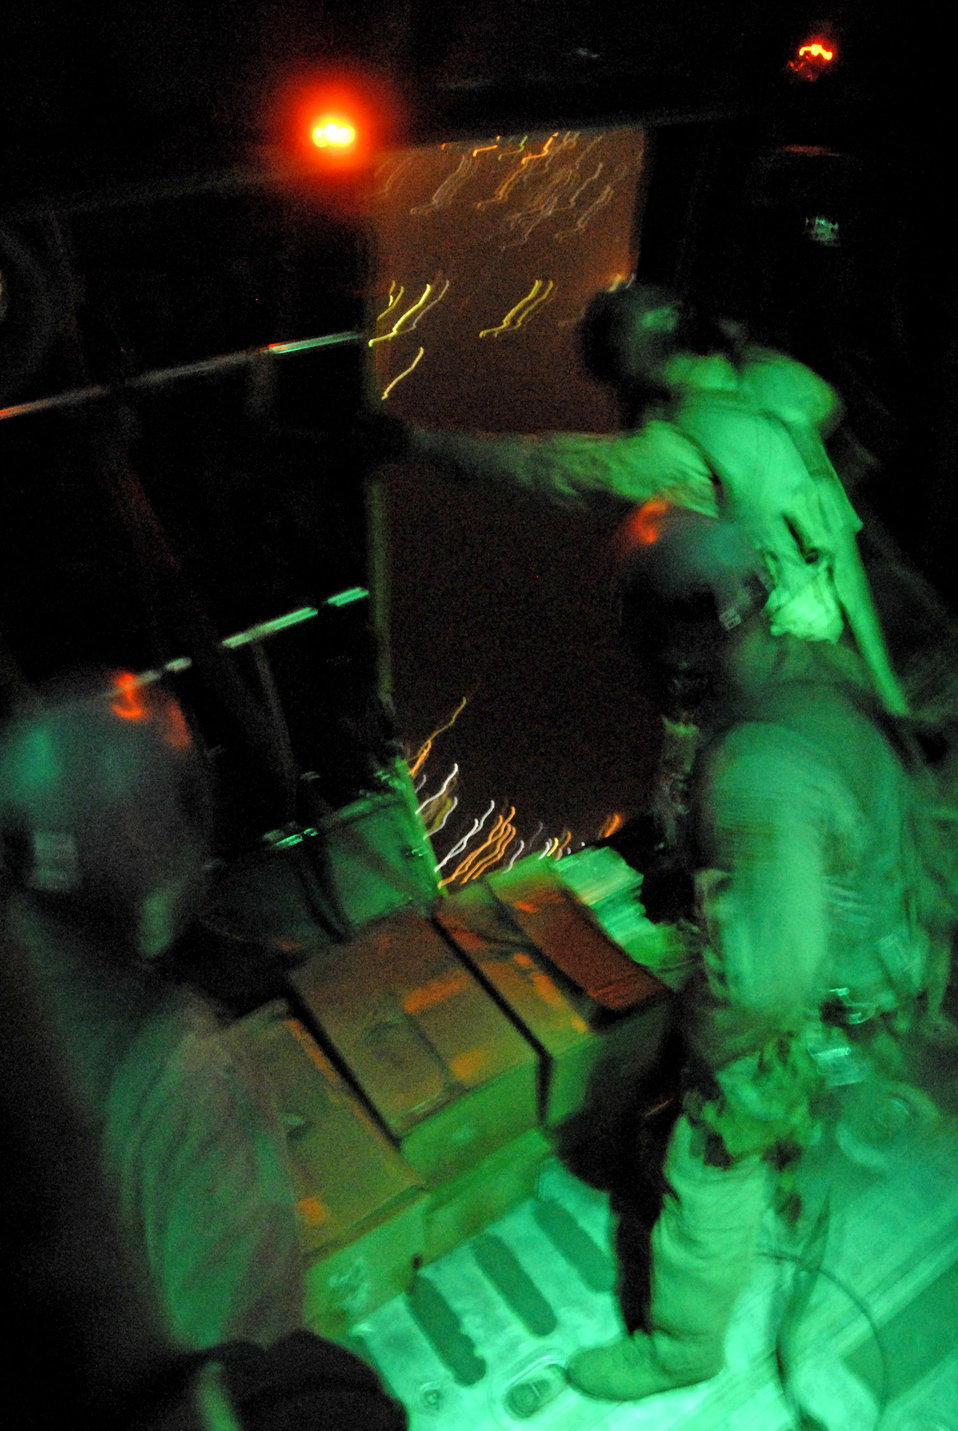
Airmen airdrop messages to Iraqi citizens

Aircrew members from the 737th Expeditionary Airlift Squadron wait for the light above the right rear troop door to turn green before they push out several hundred thousand leaflets over an Iraqi city recently. The three-person team includes 1st Lt. Justin Fitzpatrick (left) and Senior Airman Joel Pfaff (center), who fill the roles as feeders to Staff Sgt. Gabriel Molanders (right), the kicker on the team who ensures the leaflets get out the door and over the target area. All three aircrew members are deployed from Dyess Air Force Base, Texas.